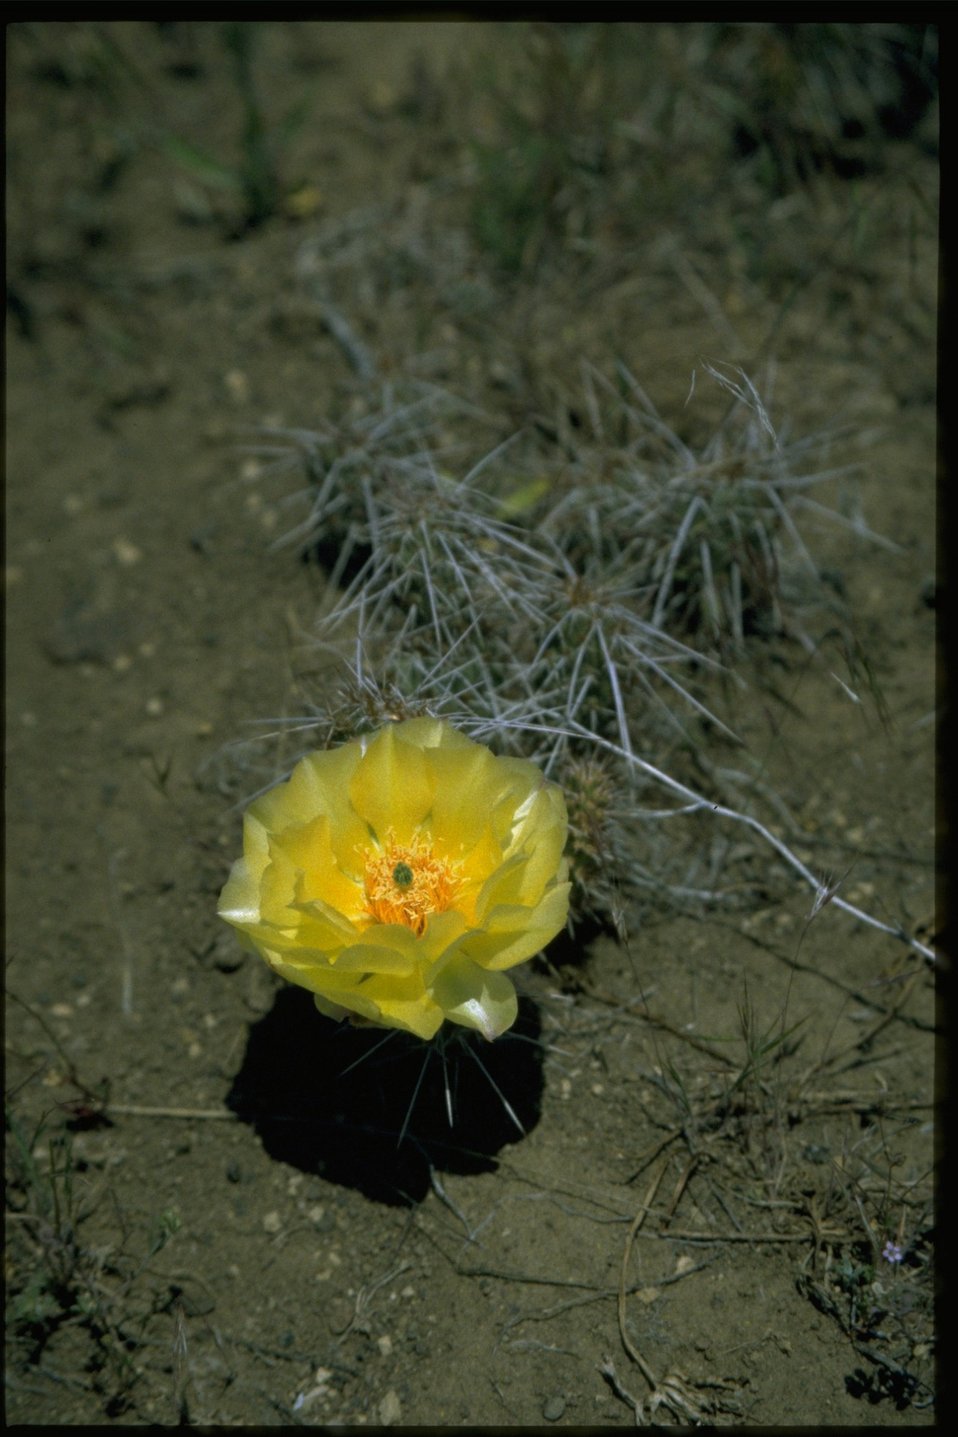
Medium shot of Opuntia.